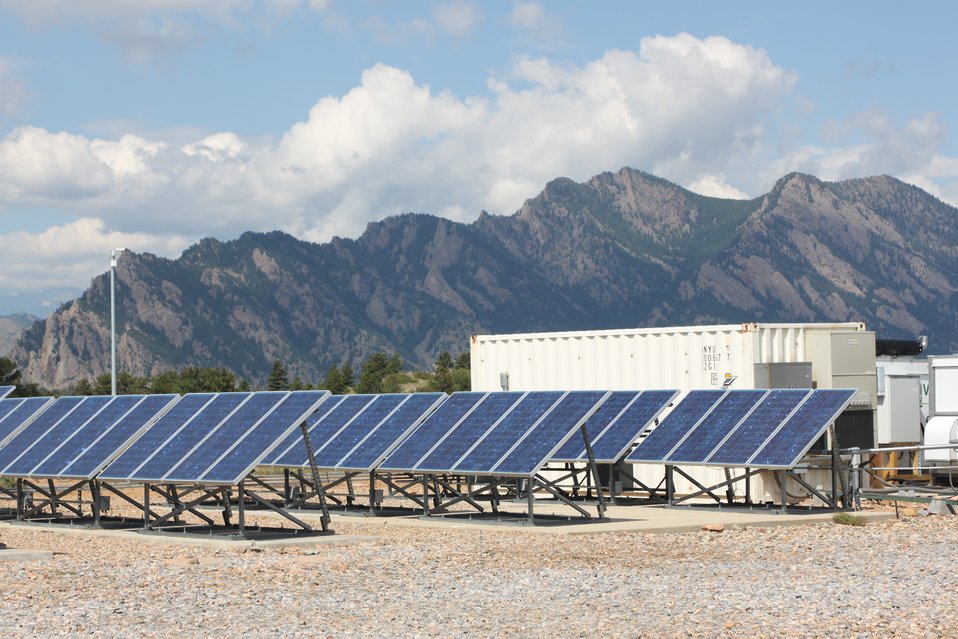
NREL'S newest PV array at the National Wind Technology Center near Boulder, Colorado is an opportunity to study how ecosystems respond to renewable energy development and development best management practices that re-established habitat, minimize weed invasion, prevent erosion and protect wildlife.